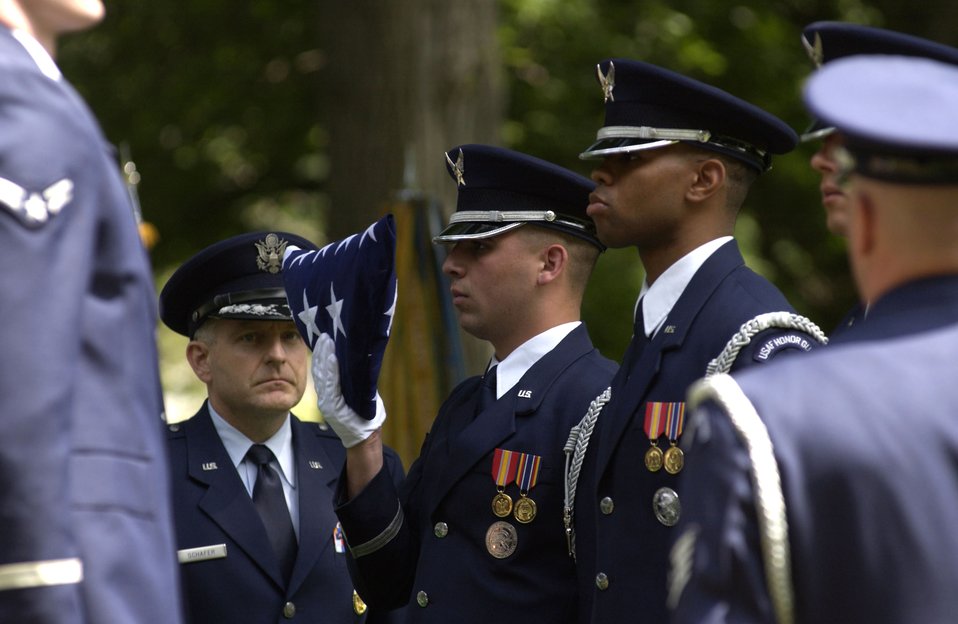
Father's Day bittersweet for one Airman's family

Brig. Gen. Paul Schafer waits for the flag to be passed to him by a member of the Air Force Honor Guard at the funeral for Staff Sgt. Calvin Cooke Jr. at Arlington National Cemetery in Arlington, Va., on Tuesday, June 20. Sergeant Cooke, a C-130 Hercules loadmaster, died in April 1972 when his aircraft crashed in South Vietnam after being hit by ground fire. His remains were identified last month by experts at the Joint Prisoner of War/Missing in Action Accounting Command headquarters. General Schafer is director of the special programs office for the under secretary of defense for acquisitions, technology and logistics.